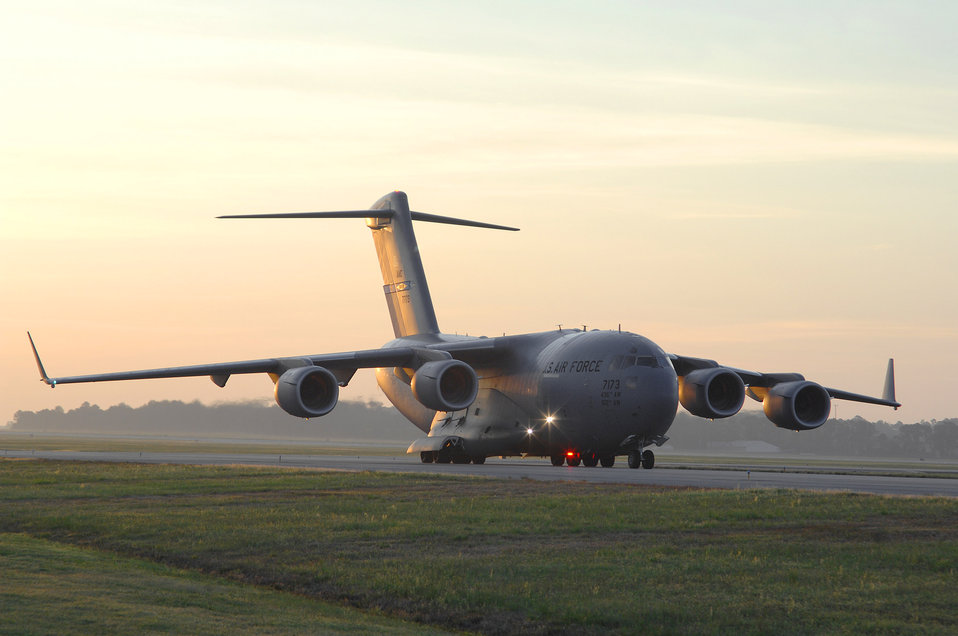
AEF deployment

A cargo-laden C-17 Globemaster III prepares for takeoff April 29 at Seymour Johnson Air Force Base, N.C. Supporting the 336th Fighter Squadron are hundreds of maintainers and other support personnel who will accompany them on the roughly four-month deployment to Afghanistan.